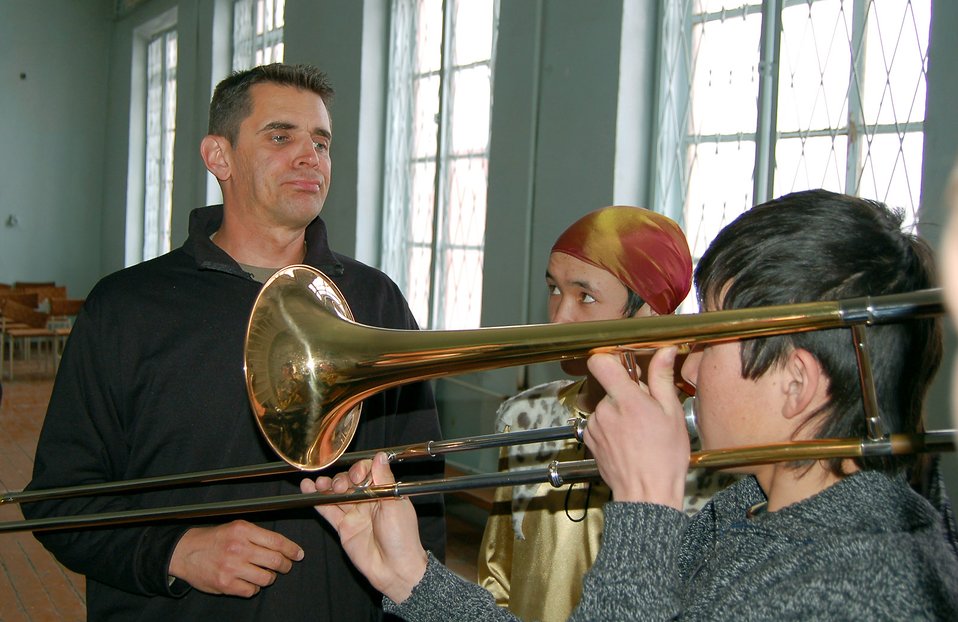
?Live Round,? helps bring gifts; music to school for the deaf

Tech. Sgt. Steve Frioux, a trombone player with U.S. Central Command Air Forces Band ?Live Round,? teaches children at the Bishkek Boarding School for the Deaf how to ?buzz? their lips and make sounds with the brass instrument at the school Feb. 13. 'Live Round' performed for Manas Air Base Airmen, and local villages and schools during their eight-day trip to Kyrgyzstan.